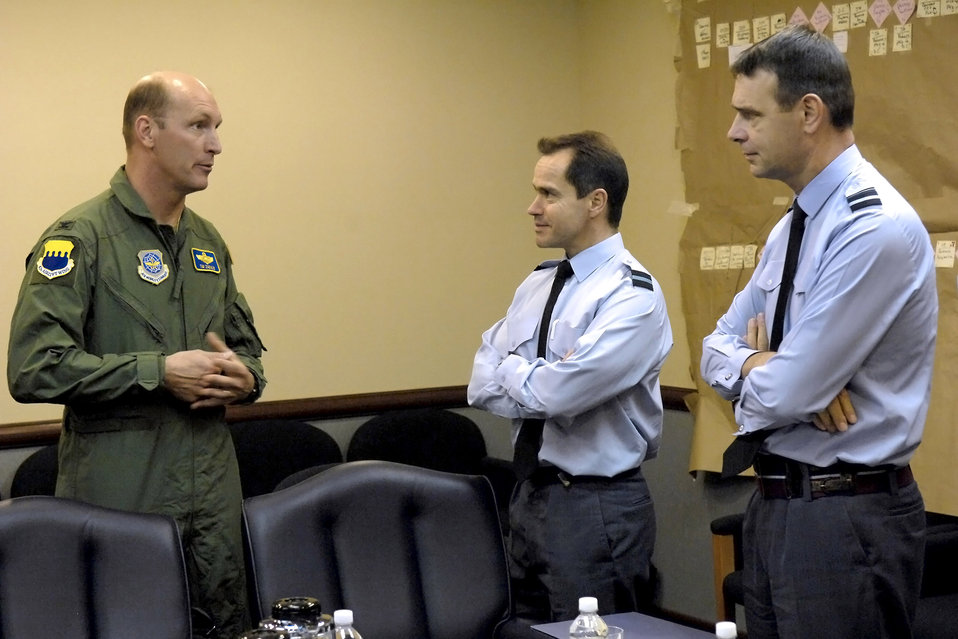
AFSO 21 interests Royal Air Force

Royal Air Force Air Vice Marshal Peter Dye (right) and Air Commodore Doug Gale listen to Col. Timothy Zadalis explain the merits of the Air Force Smart Operations for the 21st century April 20 at Pope Air Force Base, N.C. Air Vice Marshall Dye is the director of transformation for the RAF, and Air Commodore Gale is the head of delivery on the RAF transformation program. Colonel Zadalis is the commander the 43rd Airlift Wing.